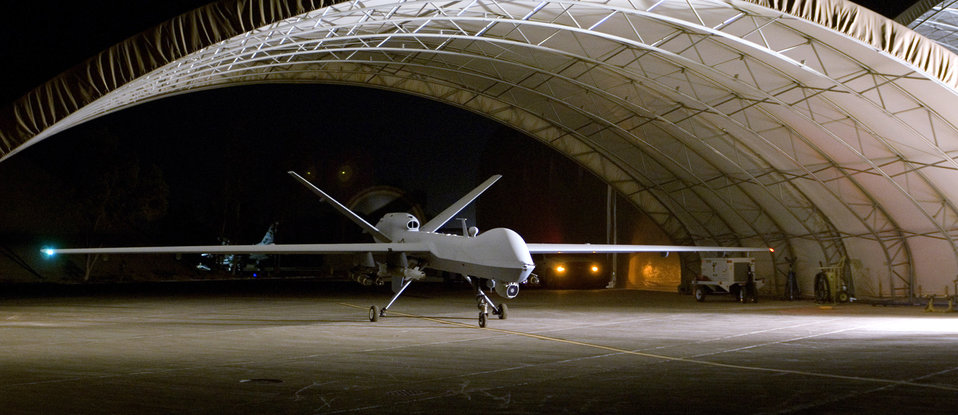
Reaper drops bomb on anti-Iraqi forces

An MQ-9 Reaper remotely piloted aircraft prepares to taxi out of a hangar Aug. 8 at Joint Base Balad, Iraq. A Reaper employed a 500-pound GBU-12 laser-guided bomb against anti-Iraqi forces Aug. 16, marking the Reaper's first weapons engagement since it began flying combat sorties over Iraq July 18.